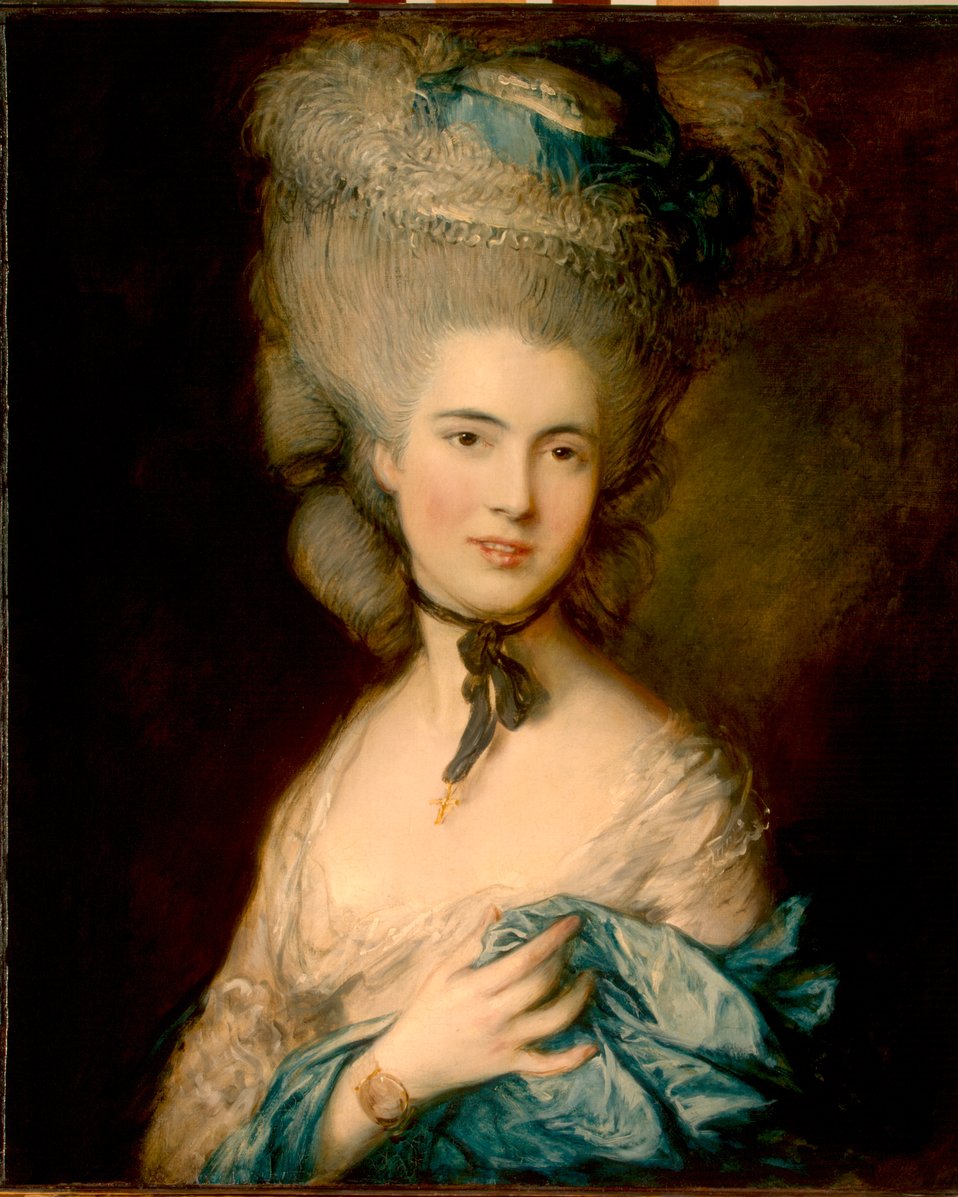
Gainsborough, Thomas - A Woman in Blue